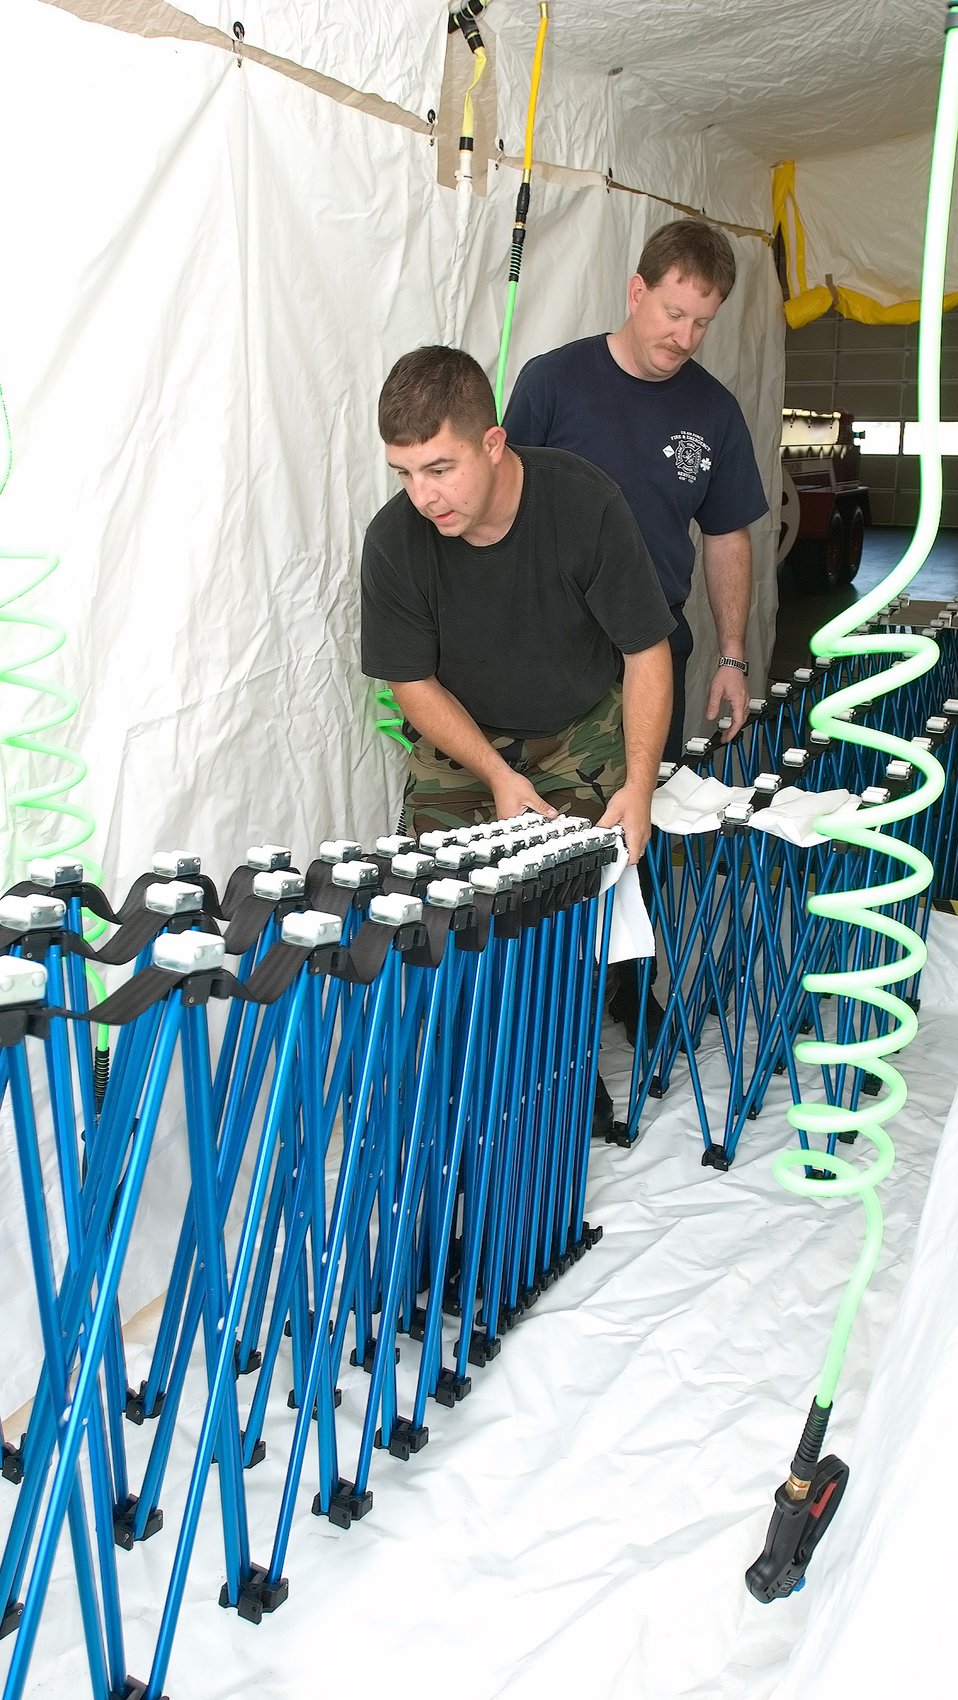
JPM Guardian helps protect warfighter

Staff Sgt. D.R. Papp and Jeff McCombs install the roller system in a three-lane decontamination shelter Nov. 2 at Dover Air Force Base, Del. The shelter is one item in a more than $230,000 equipment and training packaged provided to Dover AFB under the Defense Department Installation Protection Program Lite, also referred to as Joint Project Manager Guardian. Sergeant Papp and Mr. McCombs work in the 436th Civil Engineer Squadron fire department at Dover AFB.